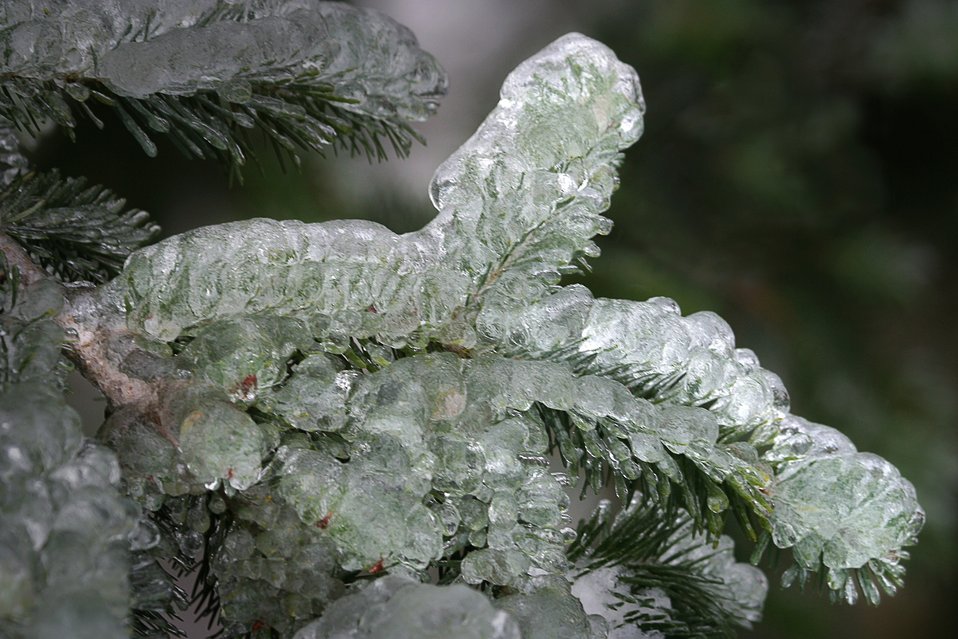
Snow and ice on Douglas Fir Bows and cones during the storm of January 2004.